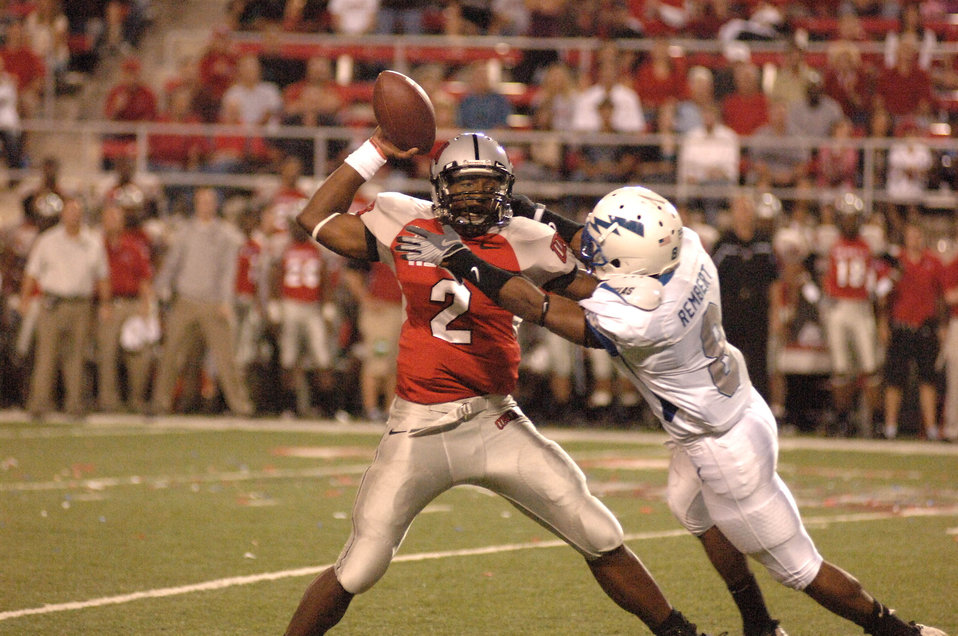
Football: Falcons win thriller in desert 29-28

U.S. Air Force Academy cornerback Reggie Rembert works to disrupt the passing of University of Nevada, Las Vegas quarterback Omar Clayton during a corner blitz Oct. 18 in Las Vegas.The Falcons won 29-28 and improved to 5-2 on the season and 3-1 in the Mountain West Conference.